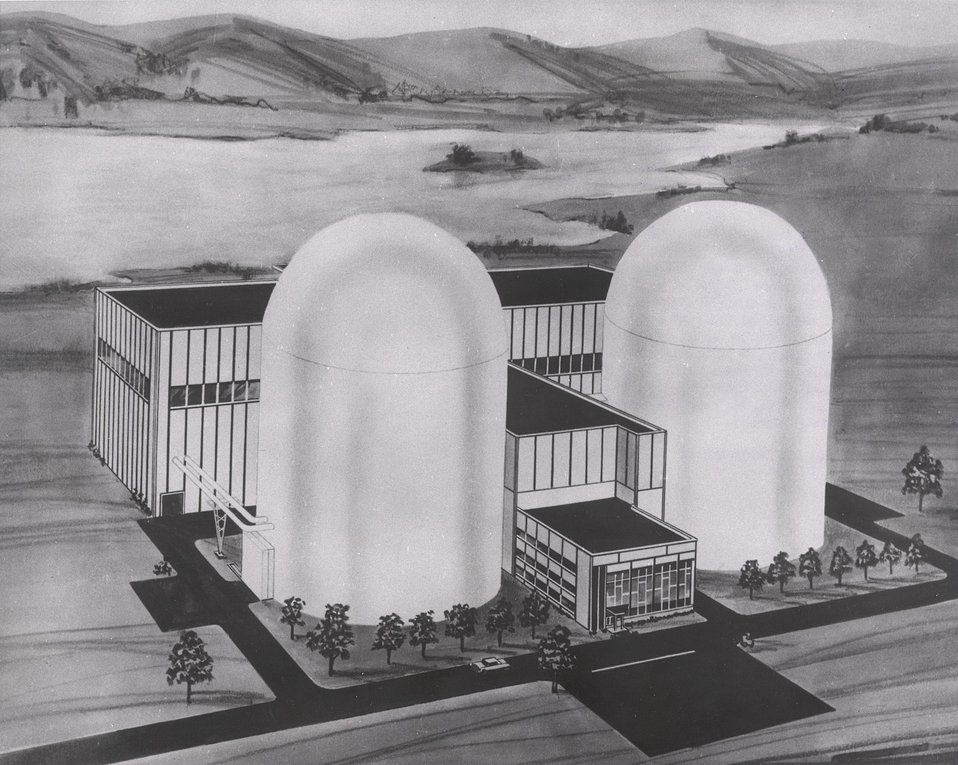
During 1966, the Duke Power Company ordered from the Babcock & Wilcox Company two 839-Mwe pressurized water power reactors that will be the initial increment of a large-scale power generating complex in the northwestern corner of South Carolina. Circa 1967.